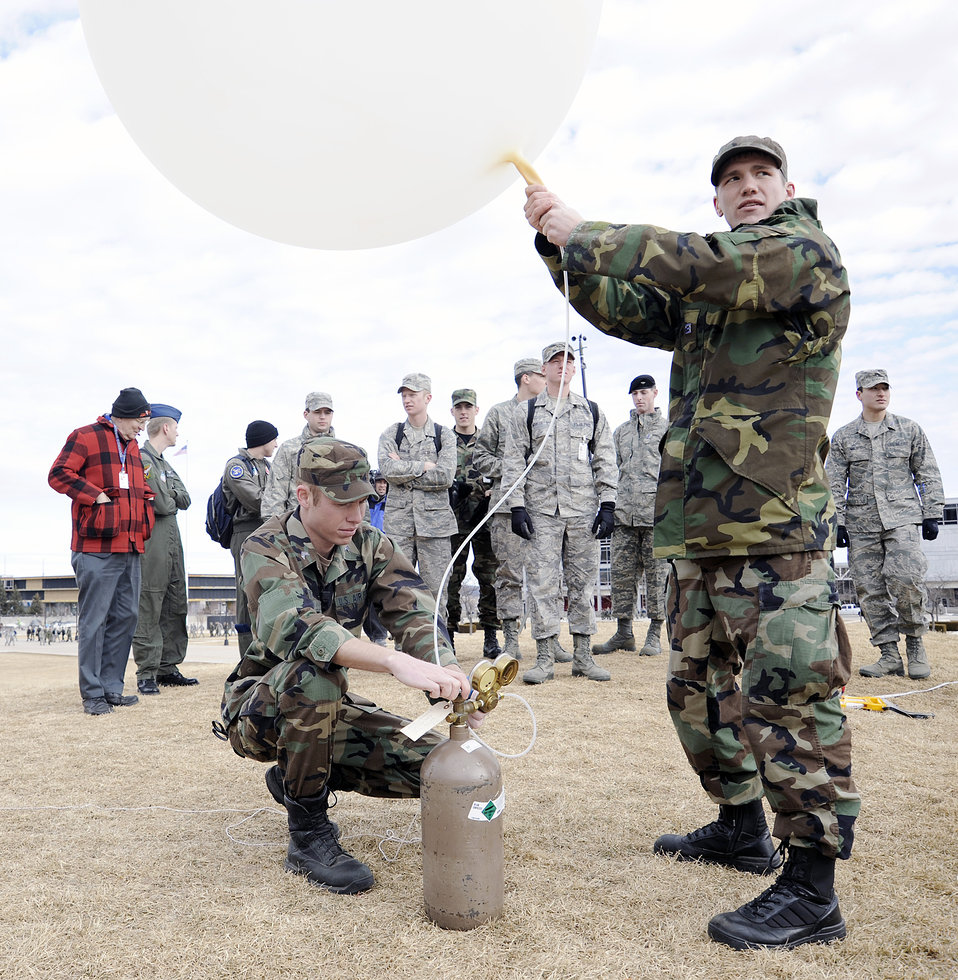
U.S. Air Force Academy, Colo-- Cadet 1st Class John Bowman and Cadet 2nd Class Taylor Olson fill the weather balloon with helium just prior to launch as part of the Meterology 320 course, Introduction to Meteorology and Aviation Weather. This course teaches the fundamentals of meteorology with special emphasis placed on flight weather and its impact on aviation.